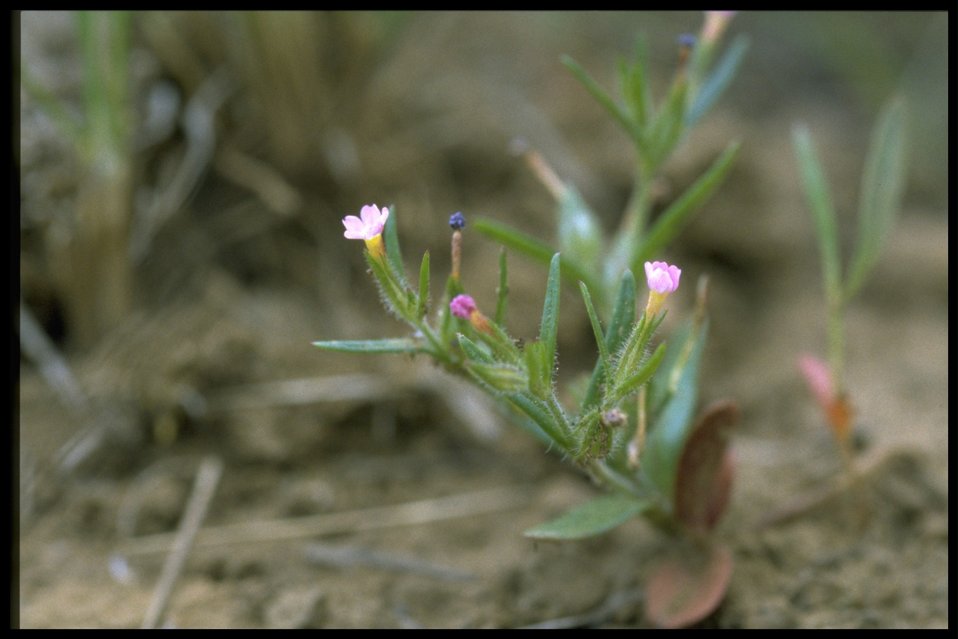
Medium shot of slender phlox (Microsteris gracilis).